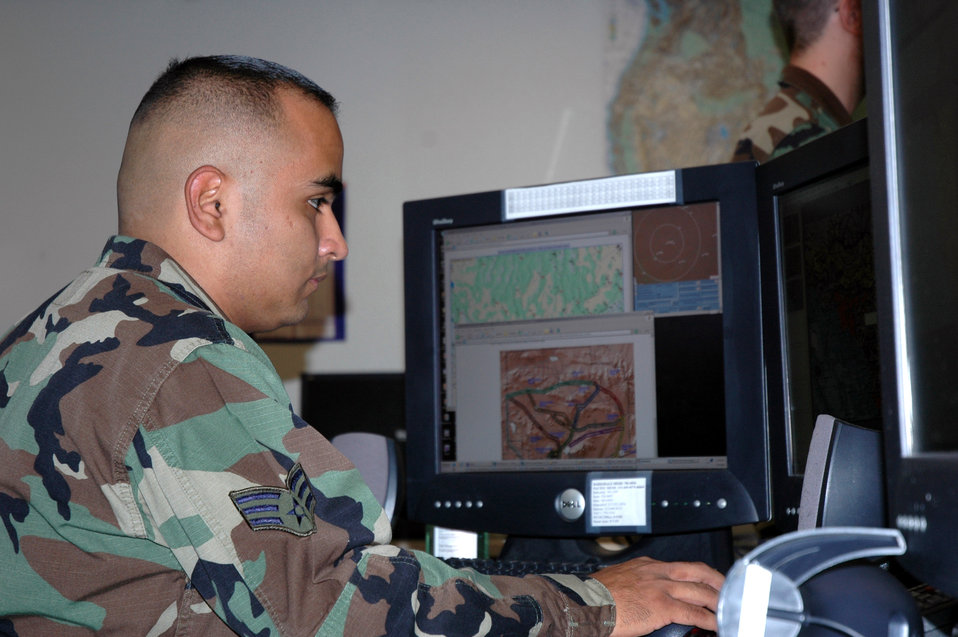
Changes in weather agency structure improve efficiency

Senior Airman Javier Acosta works in the flight weather briefing cell at the 25th Operational Weather Squadron at Davis-Monthan Air Force Base, Ariz. The weather cell distributes various weather briefings to pilots and mission planners.